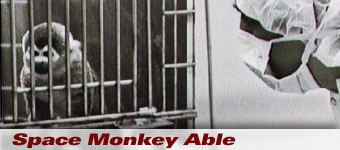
Space Monkey Able

Able-Baker mission history spotlight graphic .